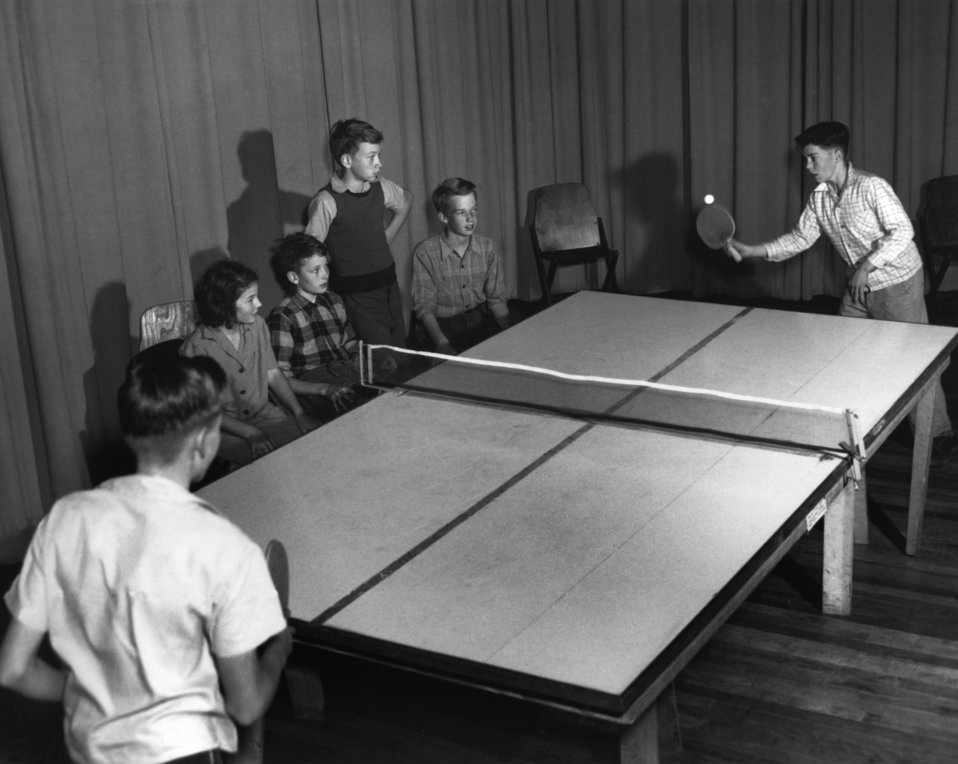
Ping Pong Game Oak Ridge

Pro-475 DOE photo Ed Westcott 4-28-1945 Oak Ridge Tennesse